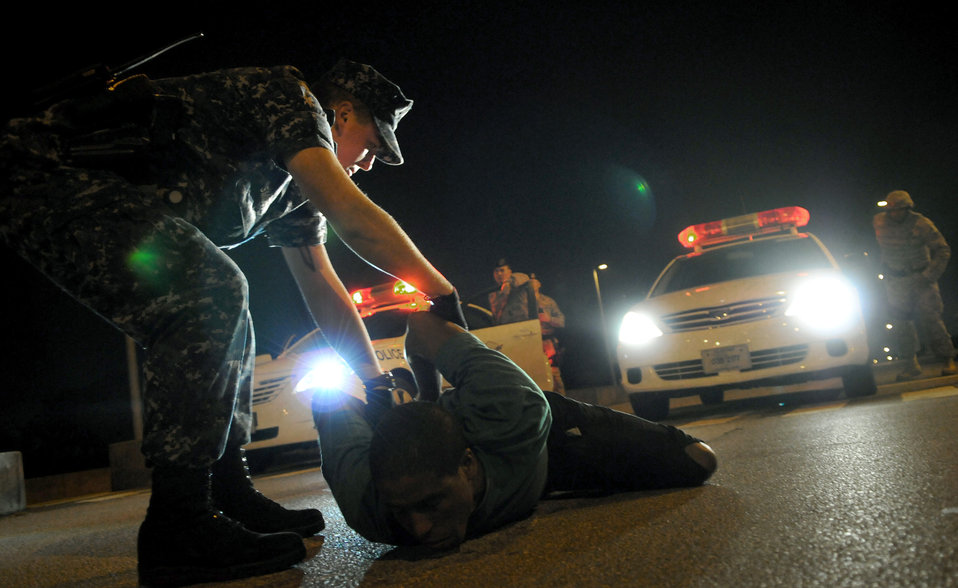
You’re arrested!

A “suspect” is apprehended after